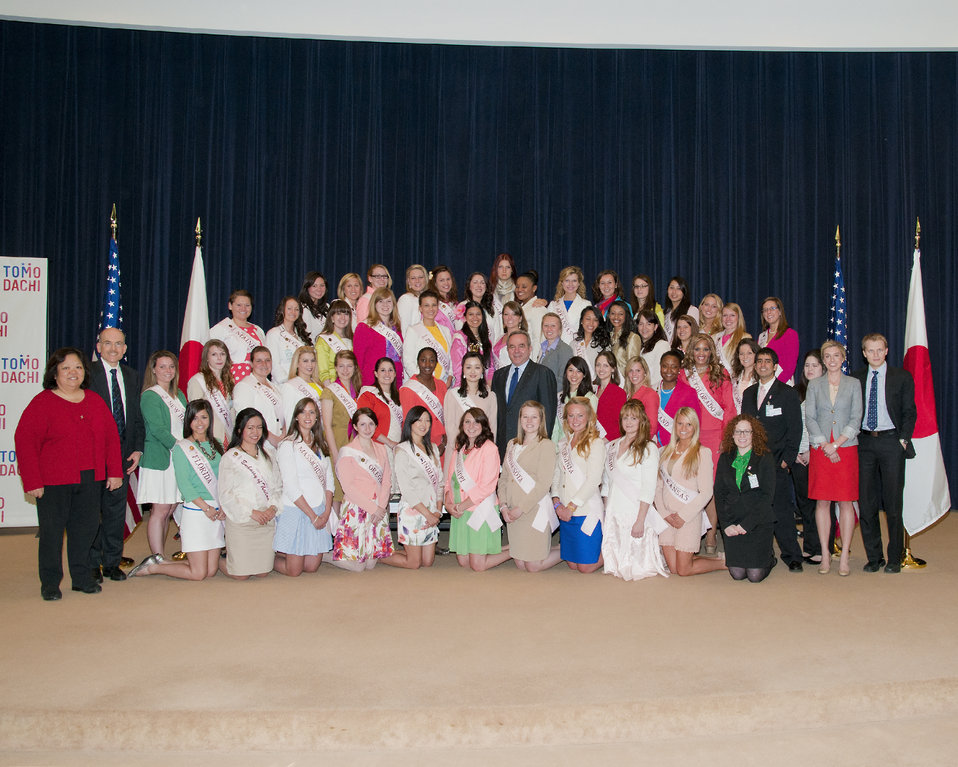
Participants at the Cherry Blossom Centennial Event Pose for a Photo

Participants at the Cherry Blossom Centennial Event hosted by the Department of State pose for a photo. Participants, included 50 Cherry Blossom Princesses, National Cherry Blossom Festival Goodwill Ambassadors, Assistant Secretary of State for East Asian and Pacific Affairs Kurt Campbell, and Special Adviser to the Secretary of State for Global Youth Issues Ronan Farrow.